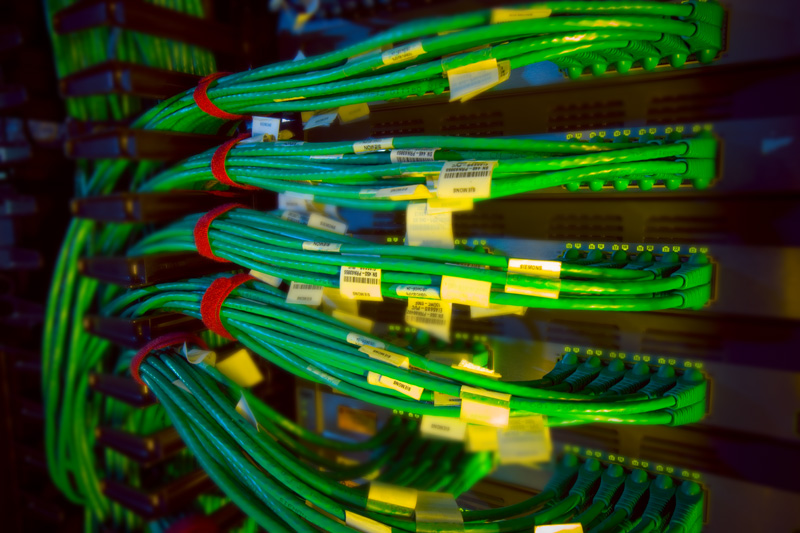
CABLES IN GRID COMPUTING CENTER ( GCC) AT THE FERMILAB.

Grid computing is a form of distributed computing in which multiple clusters of nodes work together to complete tasks. Physics submit jobs, or computer programs that physicists use to extract physics results from data, to the grid. The grid determines which resources are free and uses those nodes to process the job.